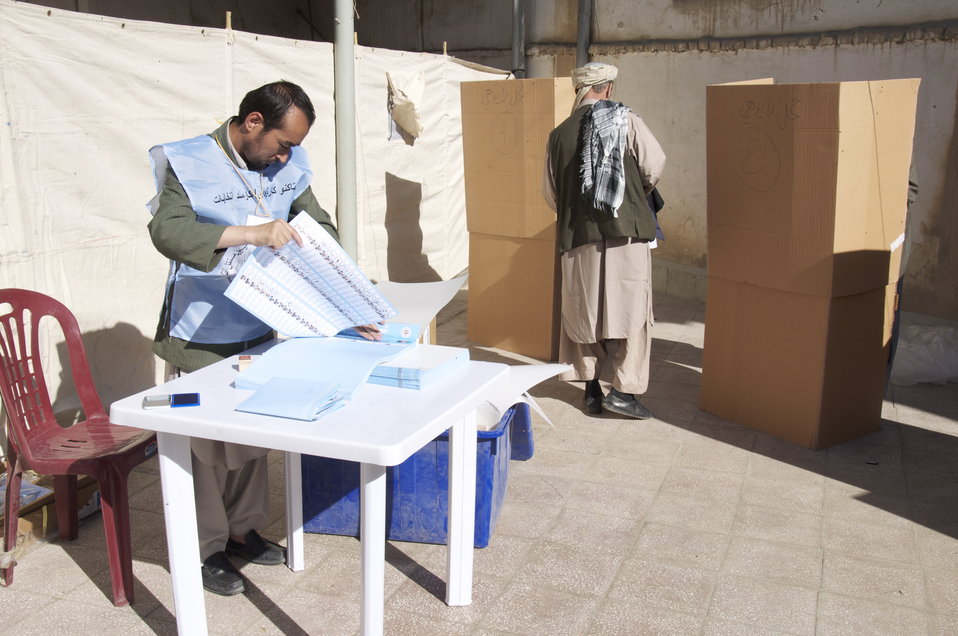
Election Worker